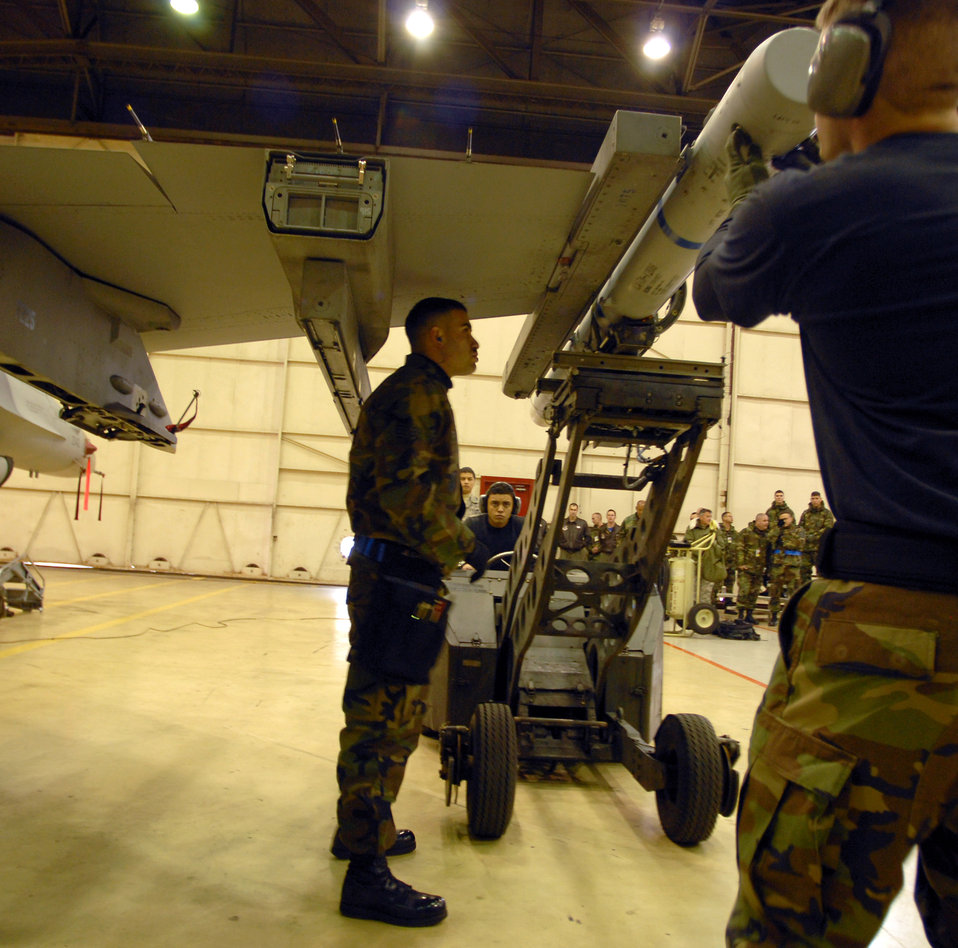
Heavy metal

Staff Sgt. Danny Colon (left) spots his teammates as they load a bomb during the weapons load competition Dec. 14 at Kunsan Air Base, South Korea. This was the final weapons load competition between the 80th and 35th Fighter squadrons for 2007. Sergeant Colon is assigned to the 8th Aircraft Maintenance Squadron.